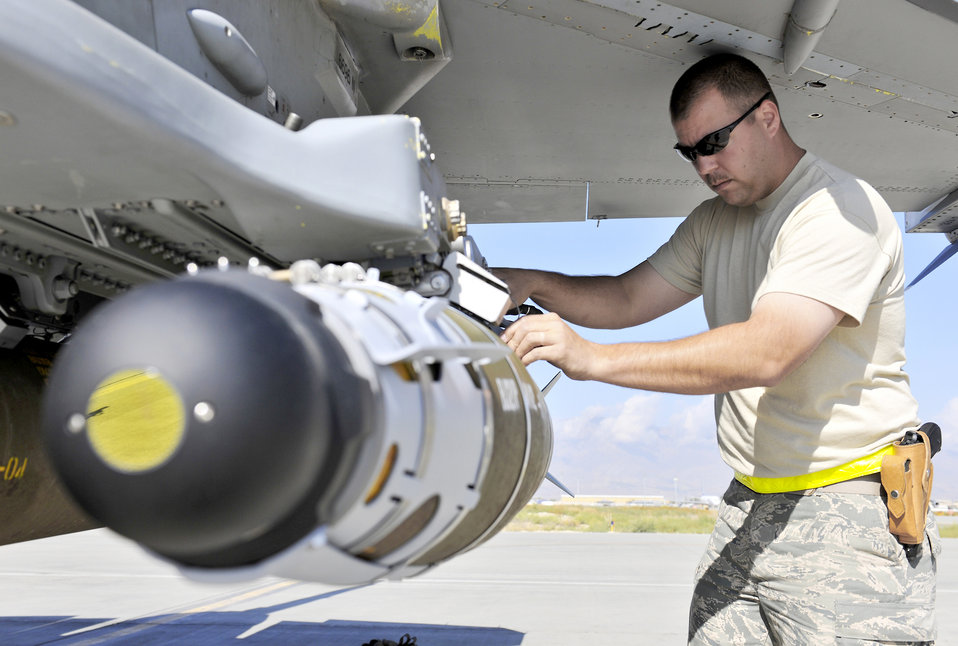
GBU-54

Tech Sgt. Darrin Sather performs a supervisory post load on a guided bomb unit-54 loaded on an F-16 Fighting Falcon Sept. 30, 2010, at Bagram Airfield, Afghanistan. The GBU-54 is the Air Force's newest 500-pound precision weapon, equipped with a special targeting system that uses a combination of Global Position System and laser guidance to accurately engage and destroy moving targets. Sergeant Sather is a weapons expeditor assigned to the 455th Expeditionary Aircraft Maintenance Squadron.